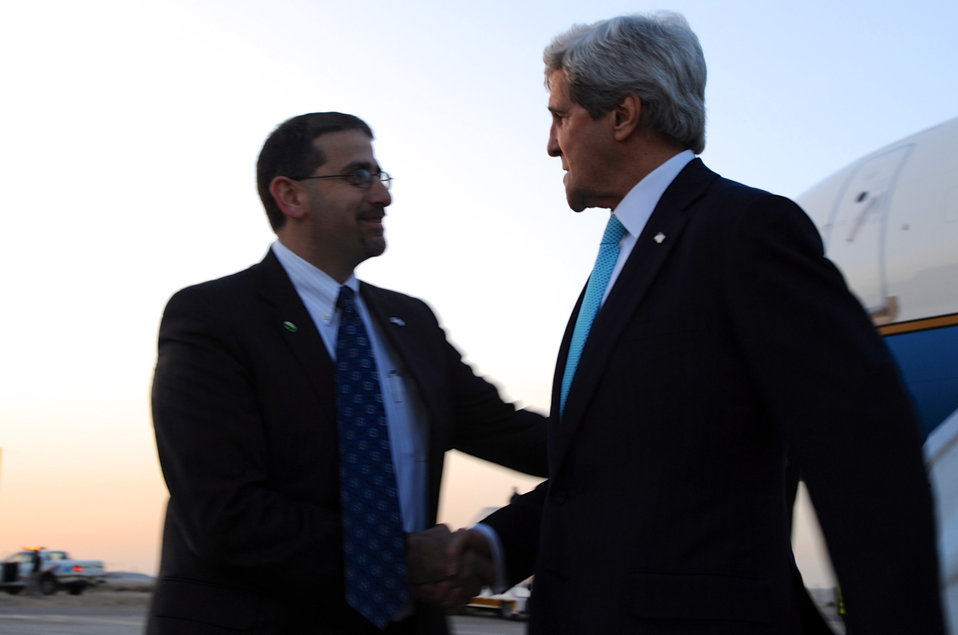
Secretary Kerry is Greeted by Ambassador Shapiro Upon Arrival in Israel For Peace Talks

U.S. Secretary of State John Kerry is greeted by U.S. Ambassador to Israel Dan Shapiro as he arrives in Tel Aviv on March 31, 2014, for peace talks with Israeli and Palestinian Authority leaders.